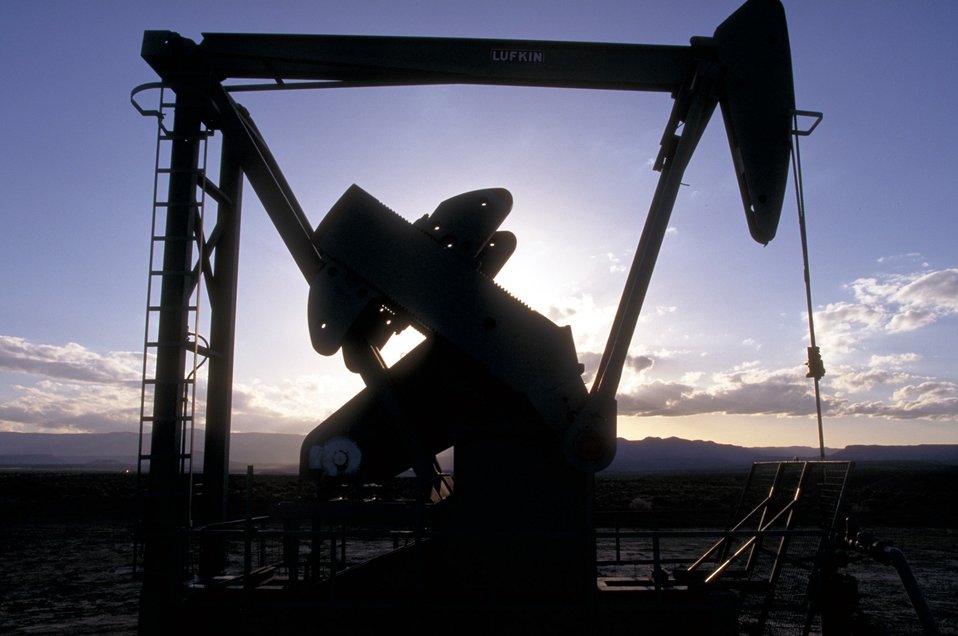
Pump unit producing coal bed methane near Price, Utah.